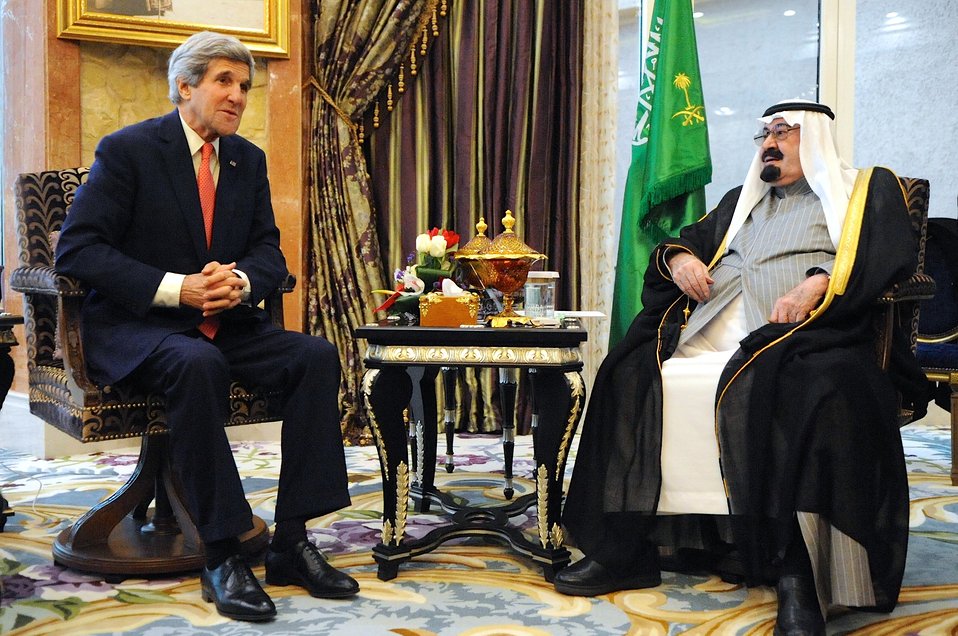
Secretary Kerry Meets With Saudi King Abdullah

U.S. Secretary of State John Kerry speaks with Saudi Arabia's King Abdullah before their meeting at his desert encampment Rawdat Khuraim on January 5, 2014.